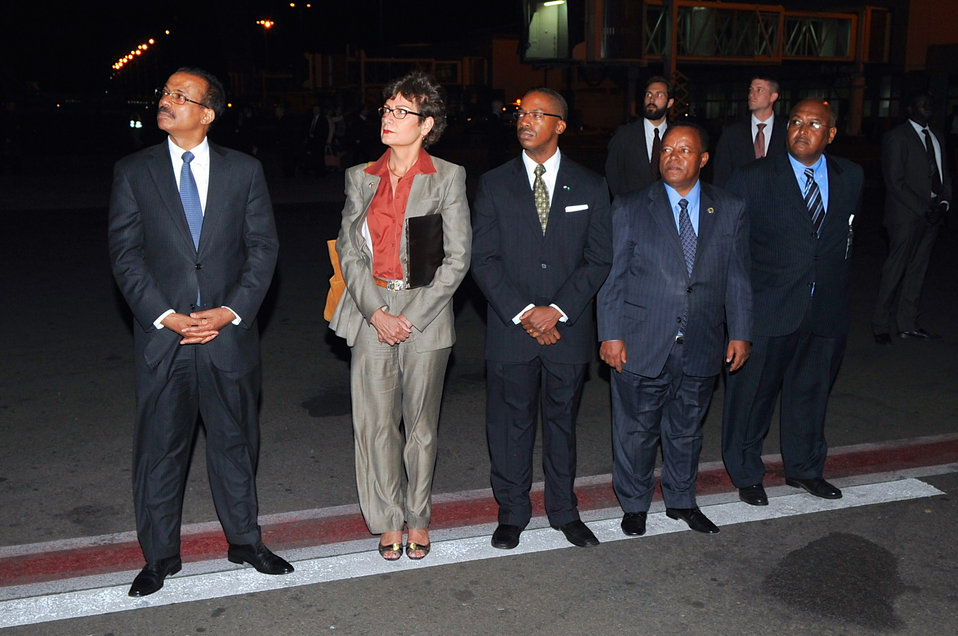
U.S., Ethiopian Officials Await Secretary Kerry's Arrival in Addis Ababa

Ethiopian State Minister for Foreign Affairs, Ambassador Berhane Gebre-Christos, U.S. Ambassador to Ethiopia Patricia Haslach, U.S. Ambassador to the African Union Reuben Brigety, and members of the Ethiopian Ministry of Foreign Affairs wait for U.S. Secretary of State John Kerry to disembark from his aircraft after his arrival in Addis Ababa, Ethiopia, on April 30, 2014, to begin a six-day African tour.